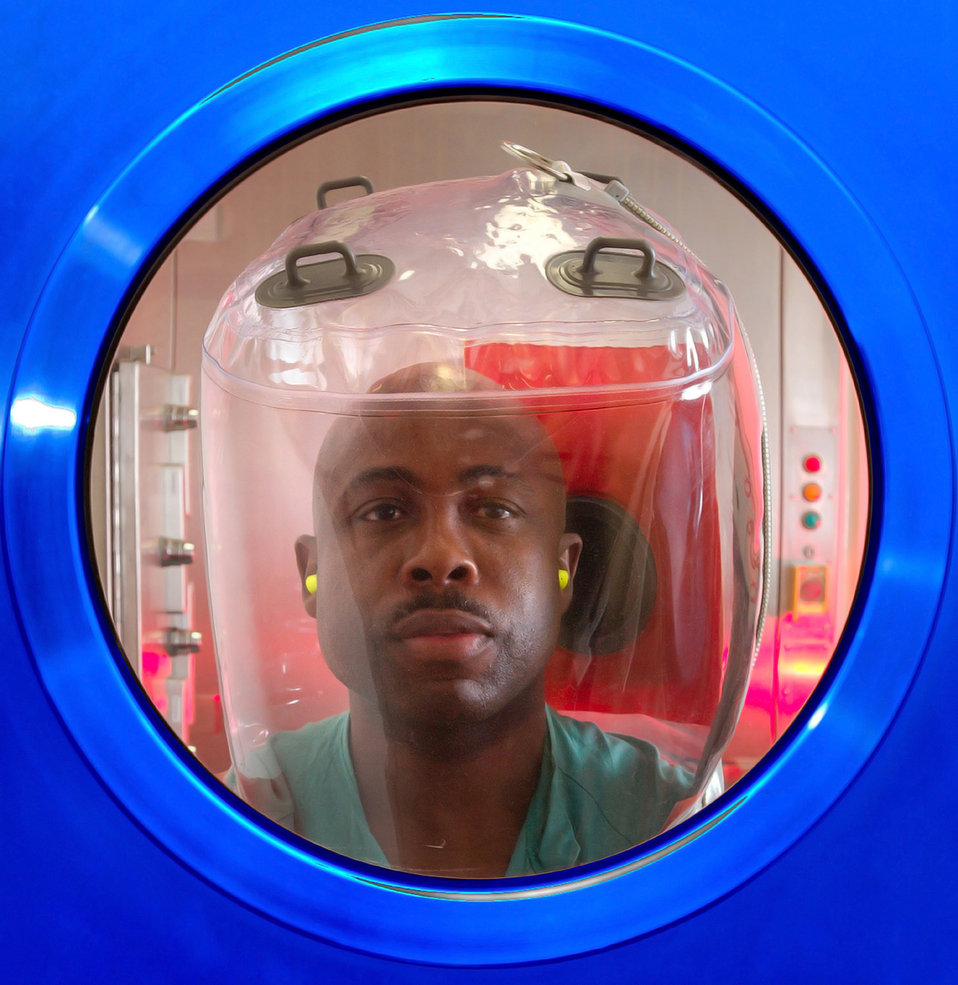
This 2007 image depicted a Centers for Disease Control microbiologist as he was peering out from inside the BSL-4 laboratory autoclave room into the outer corridor.